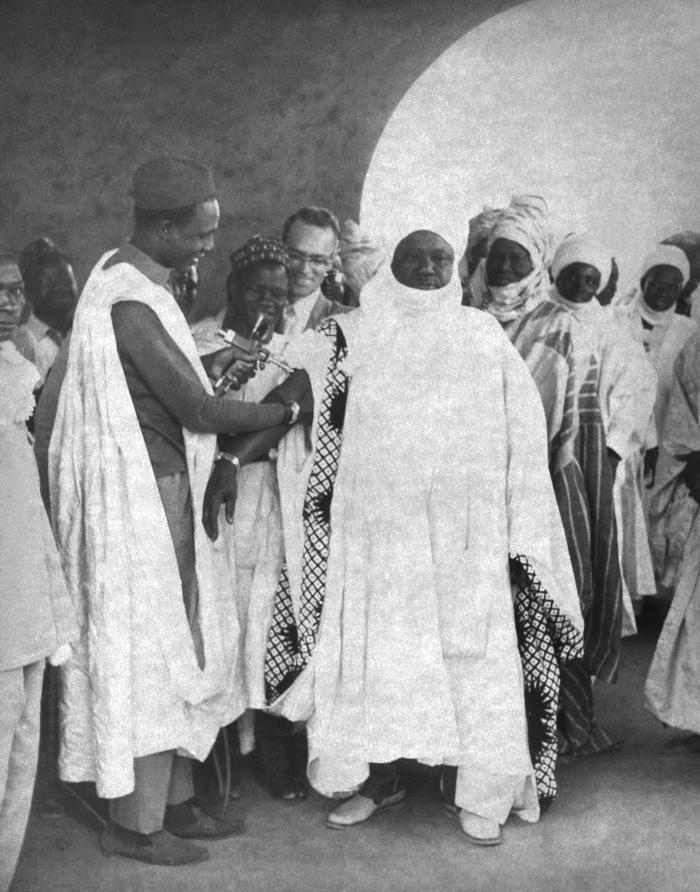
This was the Emir of Kaduna, Nigeria receiving a vaccination during the country's 1967, Smallpox Eradication Program.